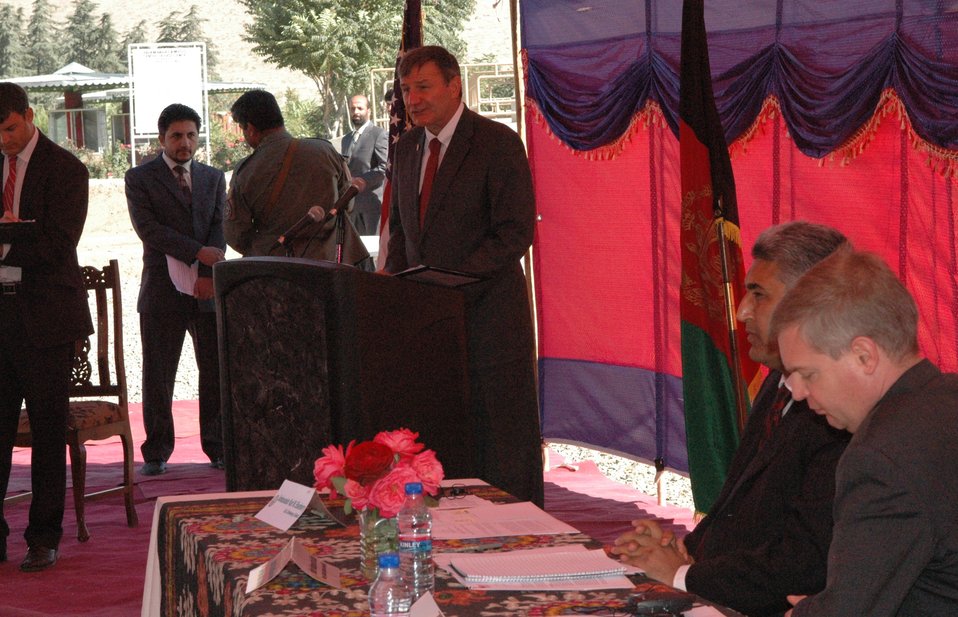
AVIPA Plus Wheat Seed Distribution 101005